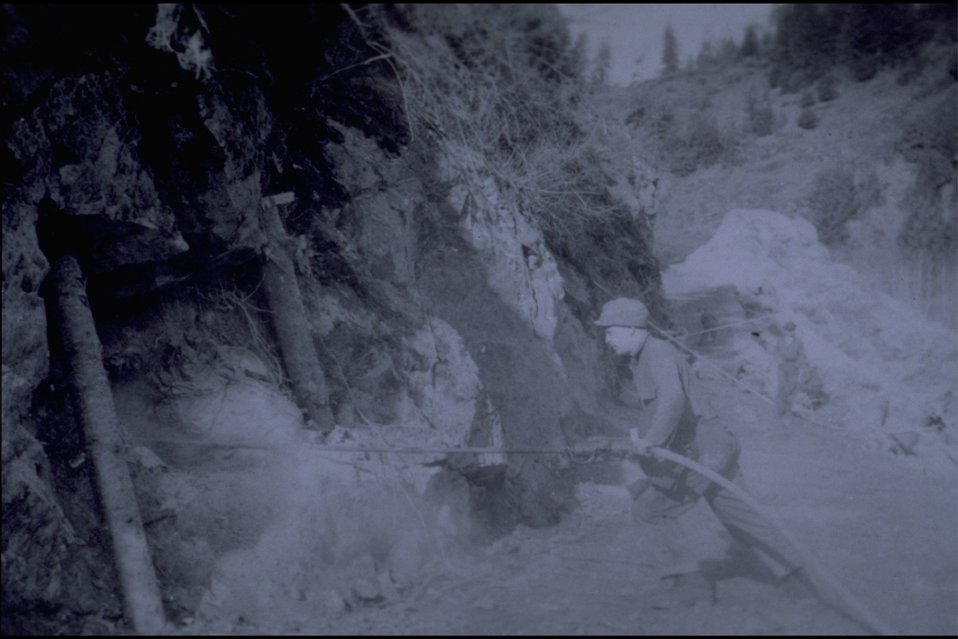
Rogue River - Just below Indian Mary Park. CCC Boys drilling powder holes.